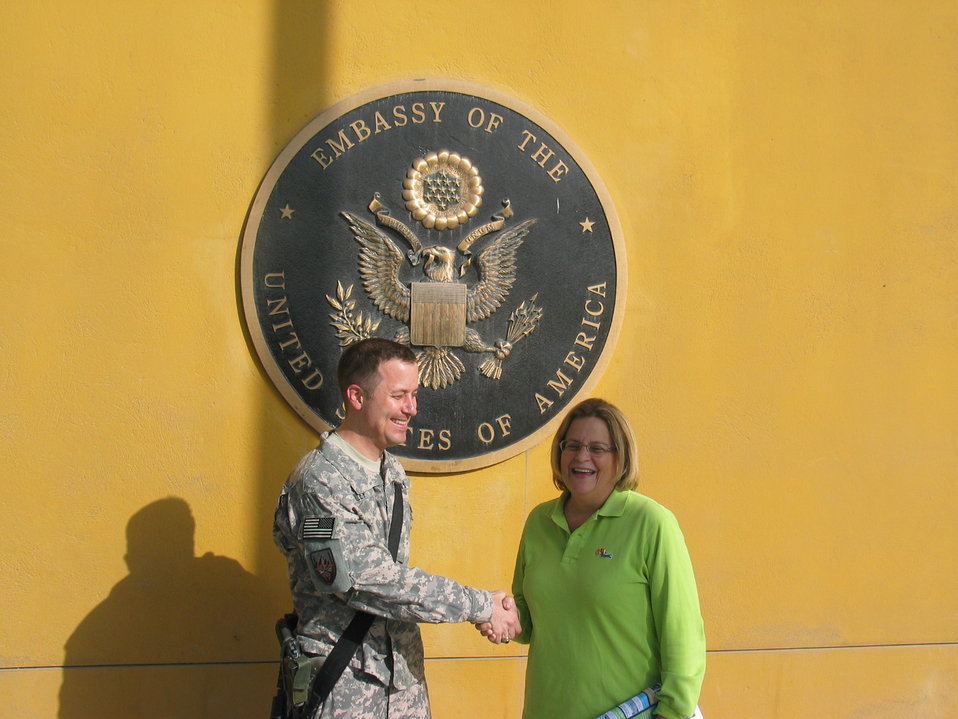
CODEL Berman